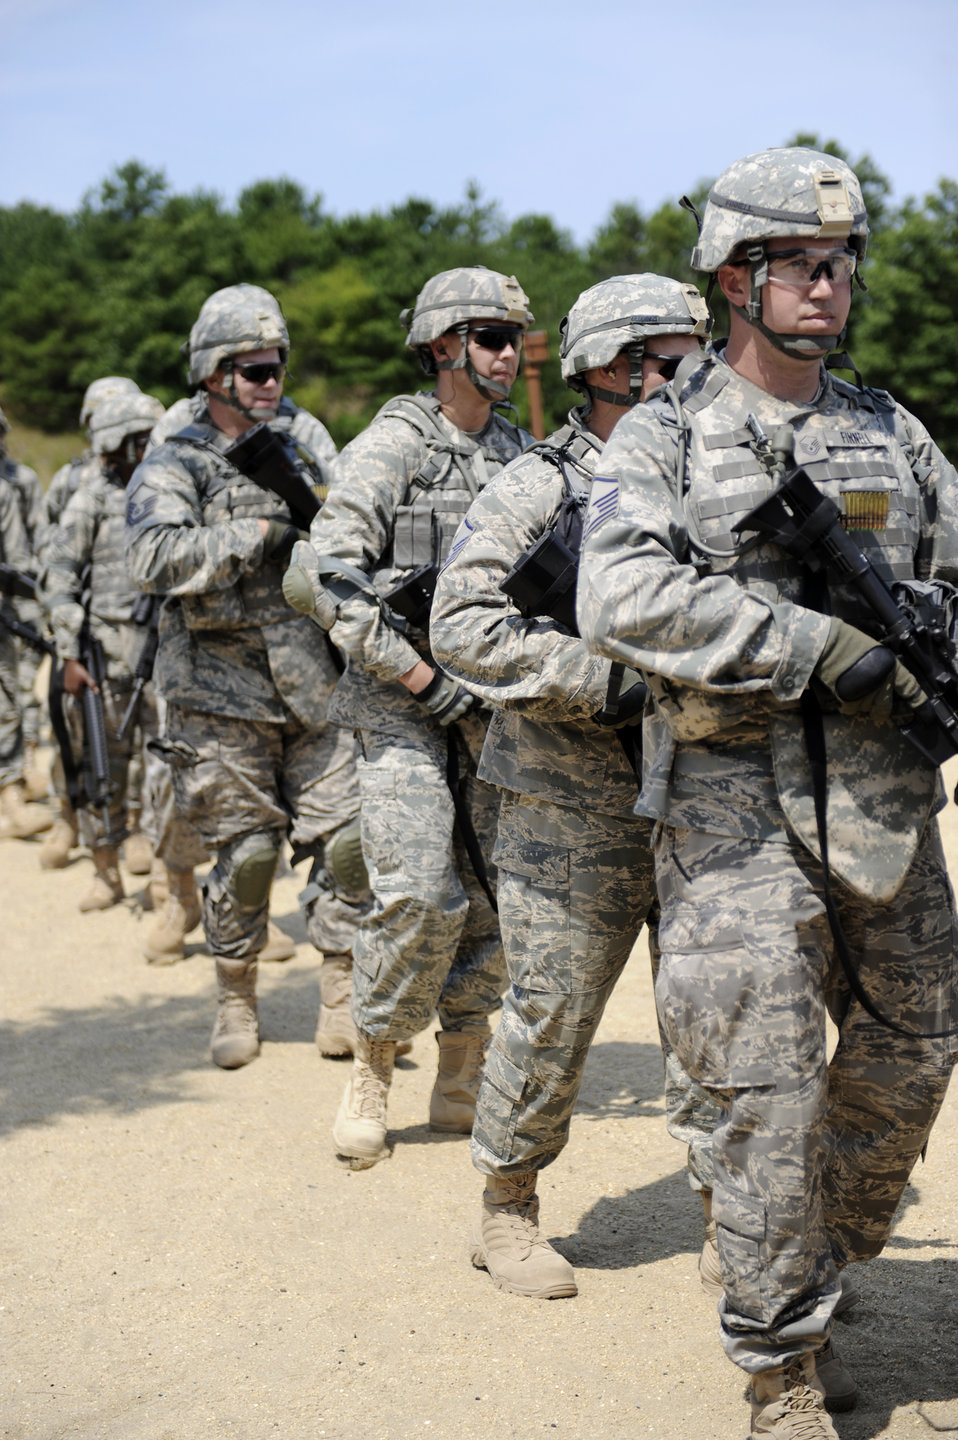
Airmen prepare for deployment

Airmen wait to clear their rifles after coming off the firing line during M-16/M-4 familiarization training Aug. 8 at Fort Dix, N.J. Combat Skills Training is a month-long Army training program that prepares Airmen for Joint Expeditionary Tasking combat roles augmenting the U.S. Army in support of operations Enduring and Iraqi Freedom.